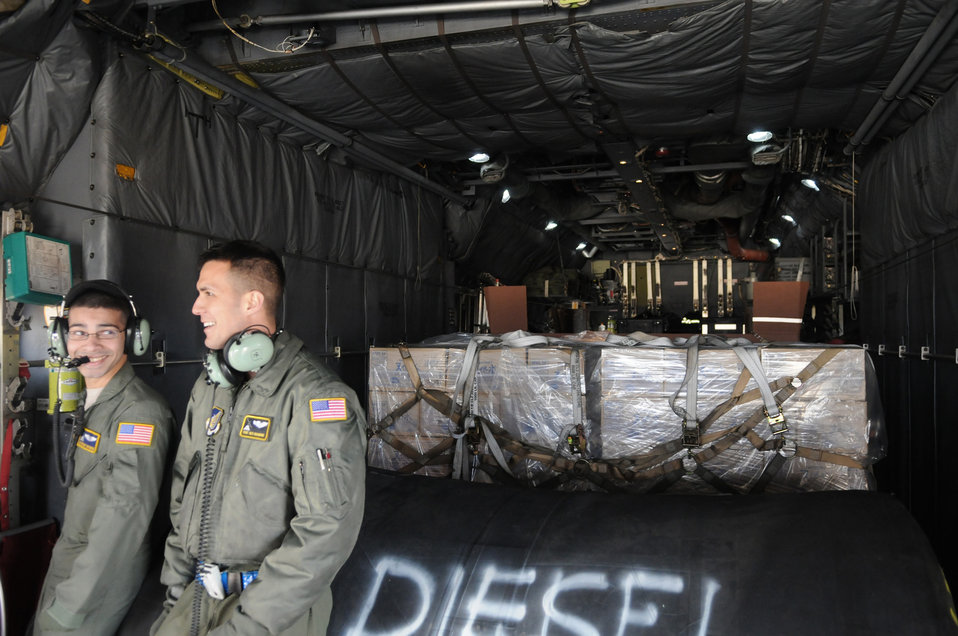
Yokota AB Airmen tackle Herculean airlift missions into Sendai

Airmen from the 730th Air Mobility Squadron load cargo on to a C-130 Hercules March 27, 2011, at Yokota Air Base, Japan. The supplies will be used in support for Operation Tomodachi.